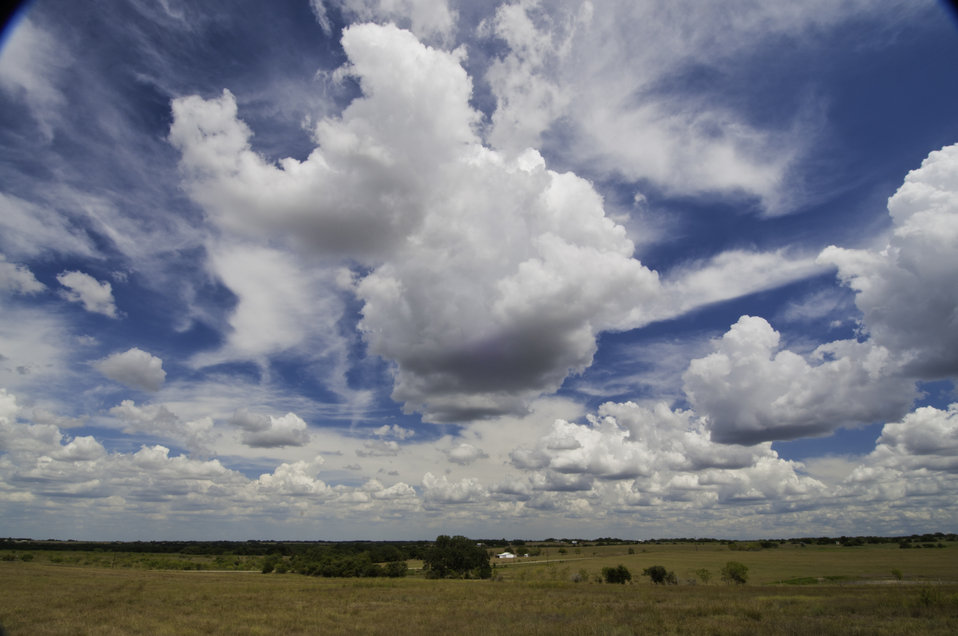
Dry livestock tanks show the effect of drought in Schulenberg, TX on Aug. 23, 2013.